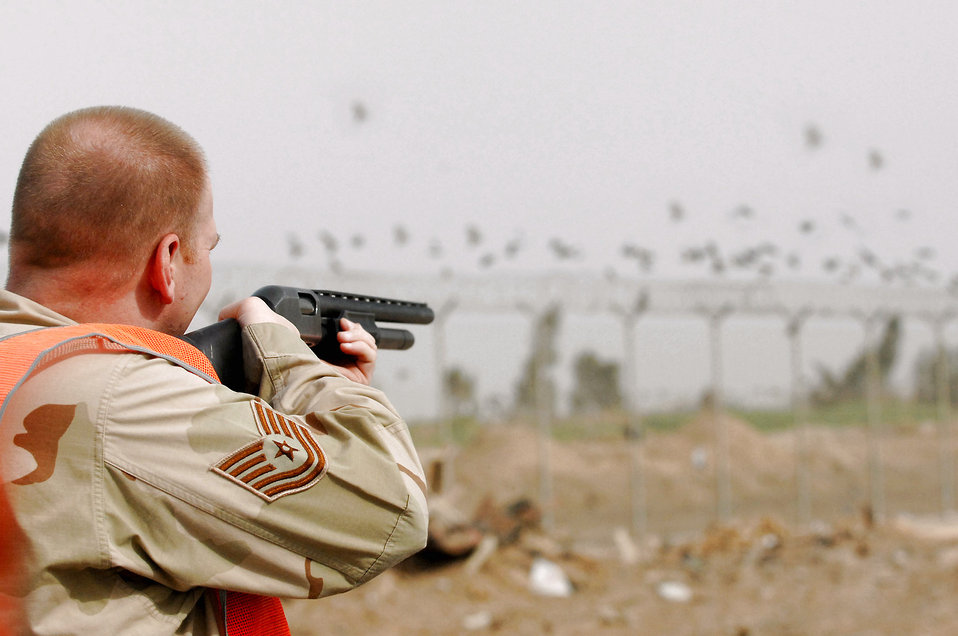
Study of Iraqi birds to help reduce aircraft mishaps

Tech. Sgt. David Young takes aim at a group of gulls to reduce the number of birds at Balad Air Base, Iraq. Collisions between flying birds and aircraft can severely damage aircraft and endanger the lives of pilots. To reduce the number of collisions, members of the 332nd Air Expeditionary Wing Safety Office depredate the birds on the base. On May 3, the remains of whole, depredated birds were shipped from the base to the Smithsonian Institution, National Museum of Natural History, Feather Identification Laboratory in Washington, D.C., to be analyzed by scientists there. This marks the first shipment of whole bird remains to be sent from Iraq to the Smithsonian. Sergeant Young is the 332nd Air Expeditionary Wing noncommissioned officer in charge of flight safety deployed from Elmendorf Air Force Base, Alaska.